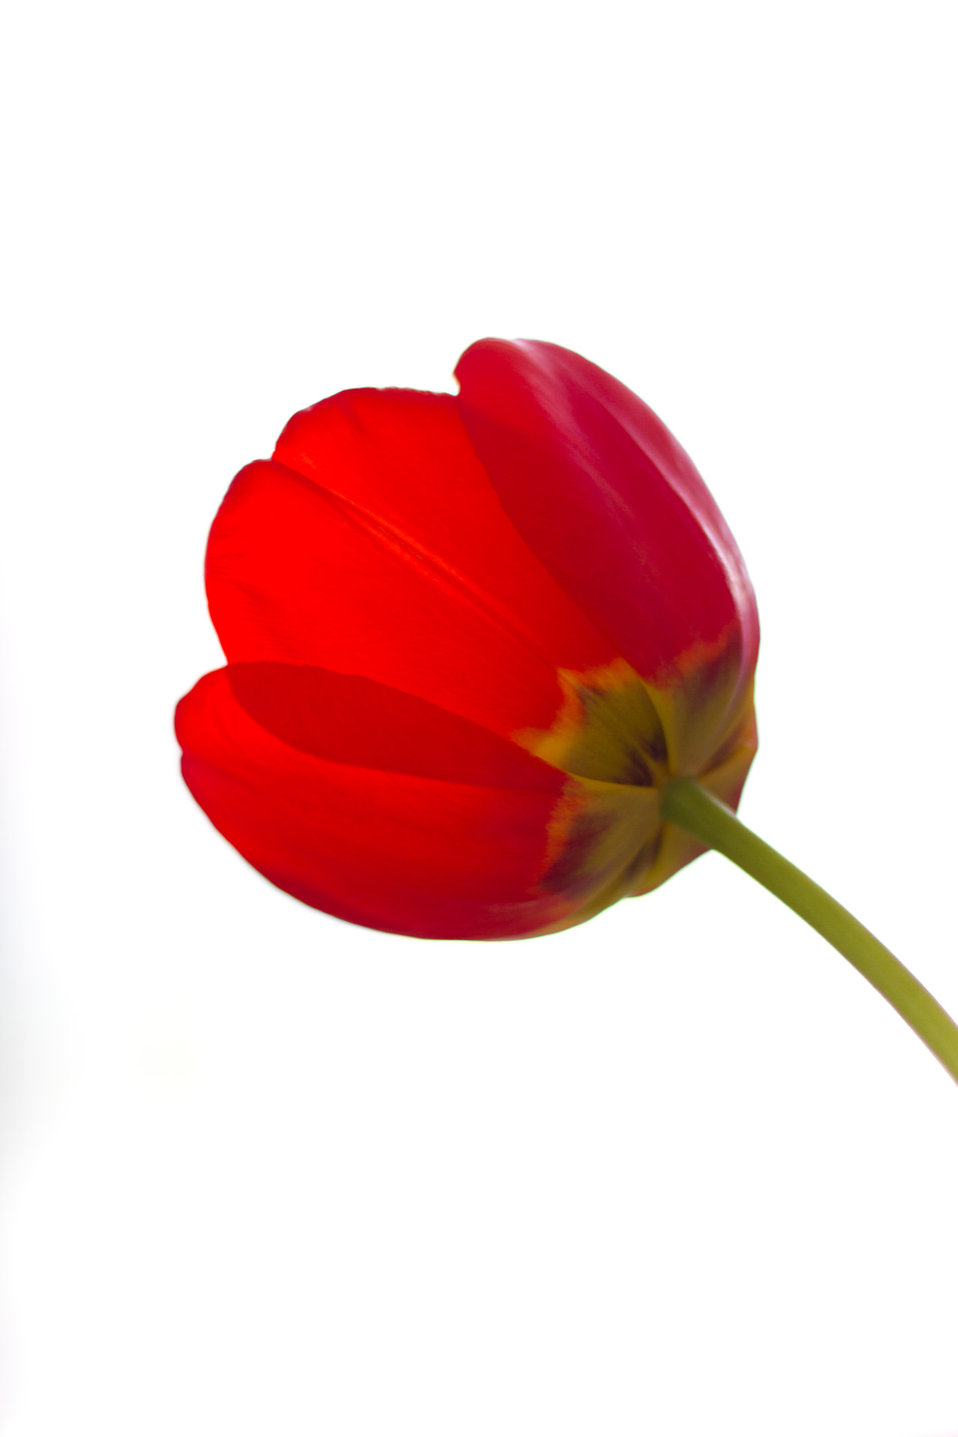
Red tulip in vase.